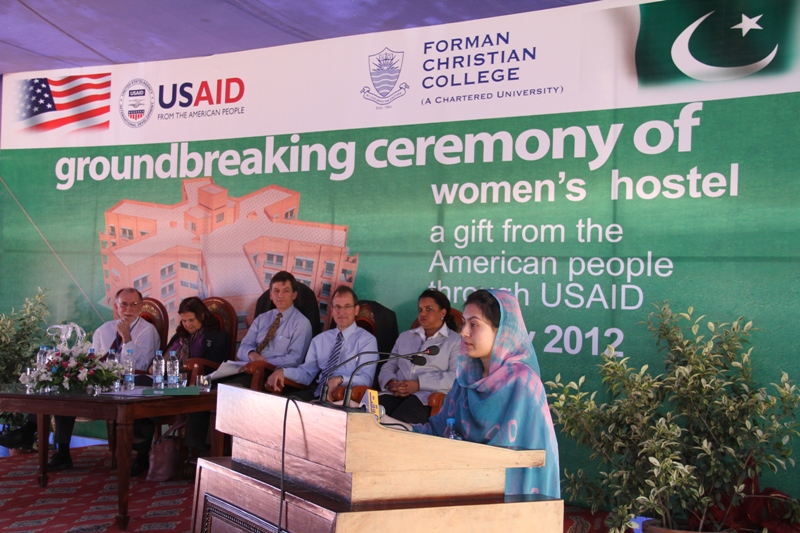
Student representative from Chitral in KPK is sharing her views on the importance of female only hostel for female students.